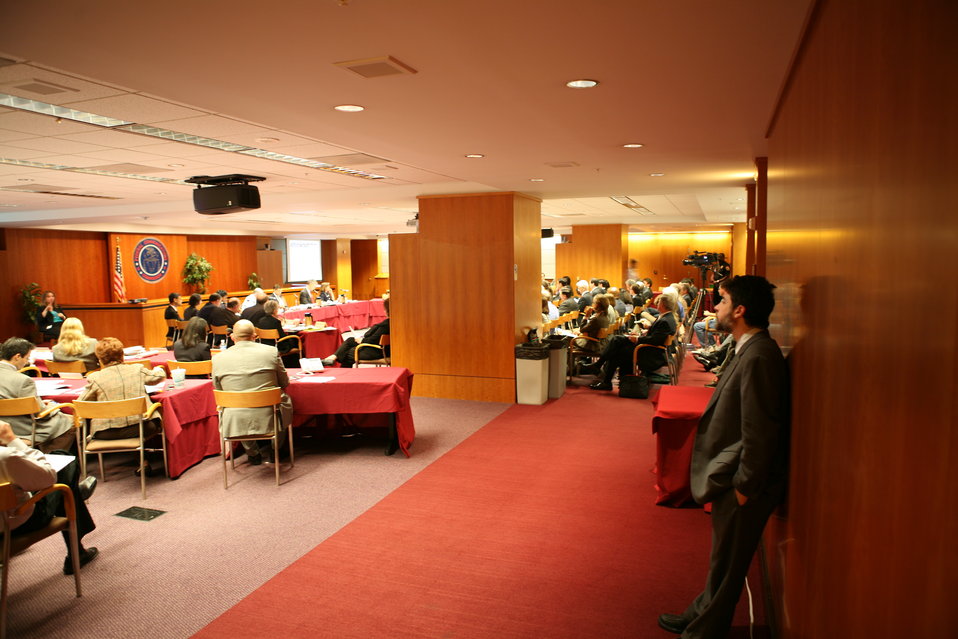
Midterm Review3

Broadband Midterm Review, 9-29-09